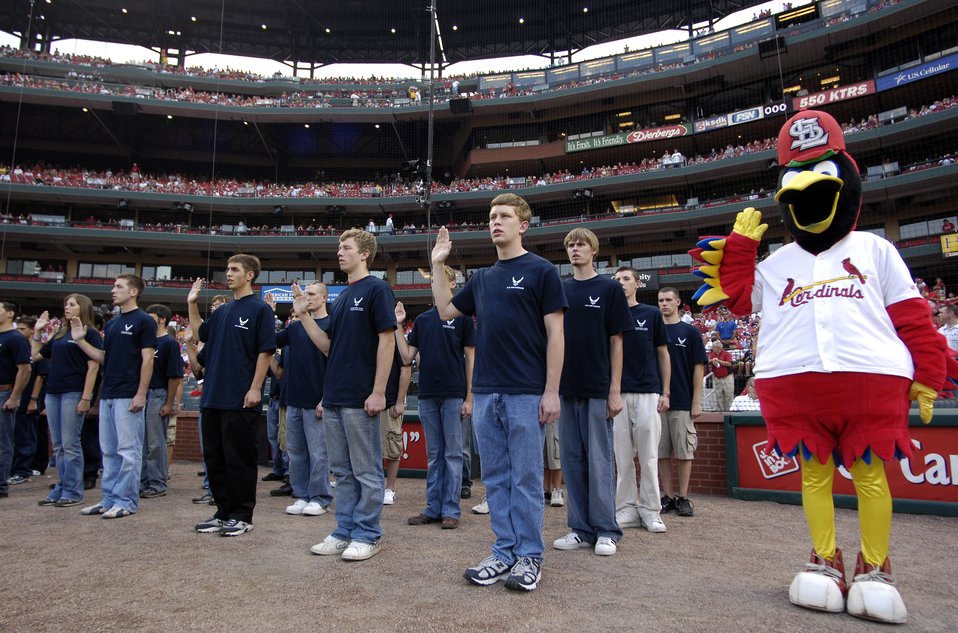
Air Force week in St. Louis

Fredbird, the St. Louis Cardinal mascot, joins in as 40 young men and women are sworn into the Air Force by Gen. Duncan J. McNabb, Air Mobility Command commander at nearby Scott Air Force Base, Ill., prior to the Cardinals-Giants baseball game July 7. The soon-to-be Airmen were enlisted during pregame activities that were part of Air Force Week in St. Louis.